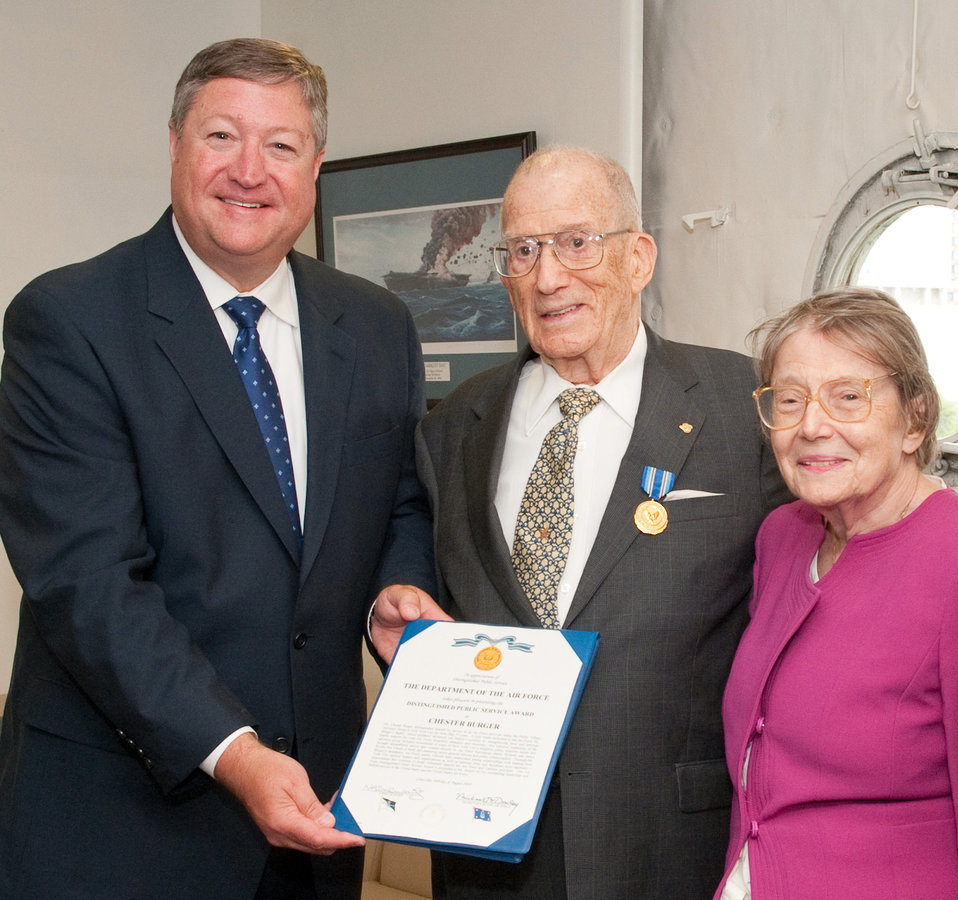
Air Force Week New York City Public Service Award

Secretary of the Air Force Michael Donley (left) presented Chester Burger (center) and his wife Elizabeth (right) the Air Force Distinguished Public Service Award Aug. 24, 2010, for his service as an Air Force advocate under the Public Affairs Advisory Group in New York City for more than 15 years.